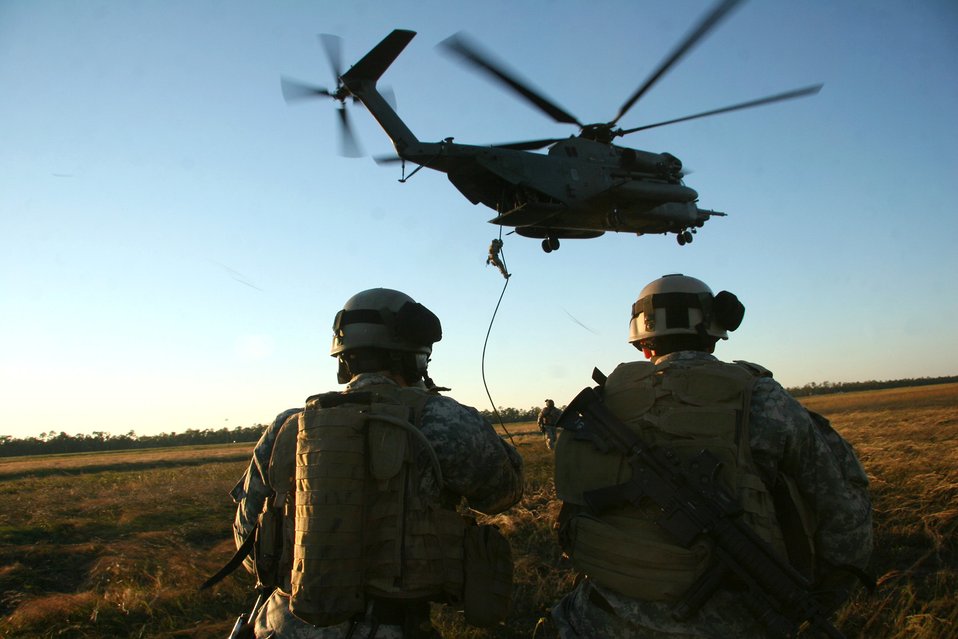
Emerald Warrior kicks off at Hurlburt Field

Special Forces Soldiers rehearse